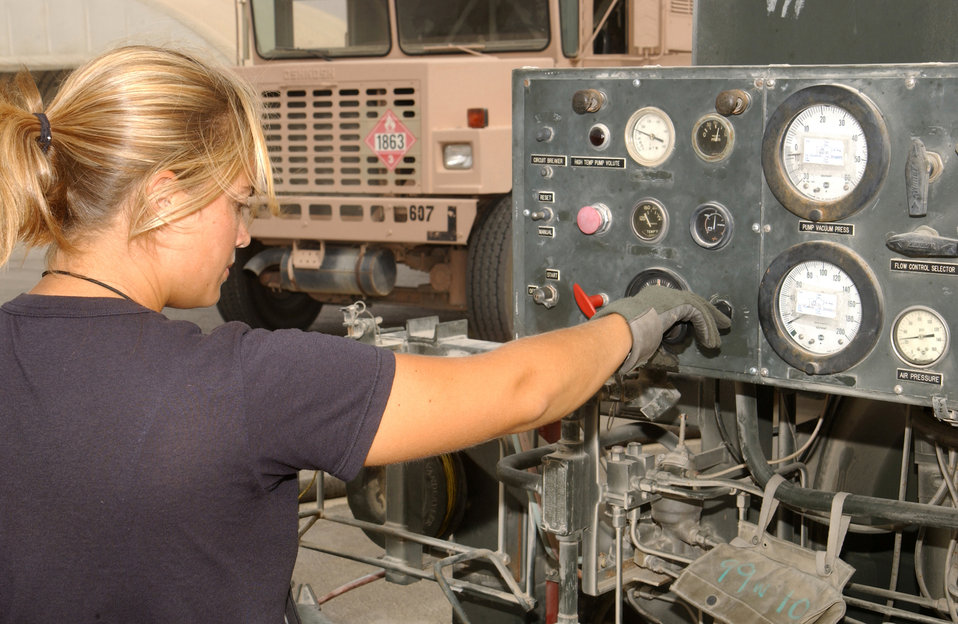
Fuels Airmen 'top off' mission

SOUTHWEST ASIA -- Airman 1st Class Holly Cather fills a fuel truck from a portable hydrant refueling unit at a forward-deployed location. She is a driver assigned to the 380th Expeditionary Logistics Readiness Squadron's fuels flight.